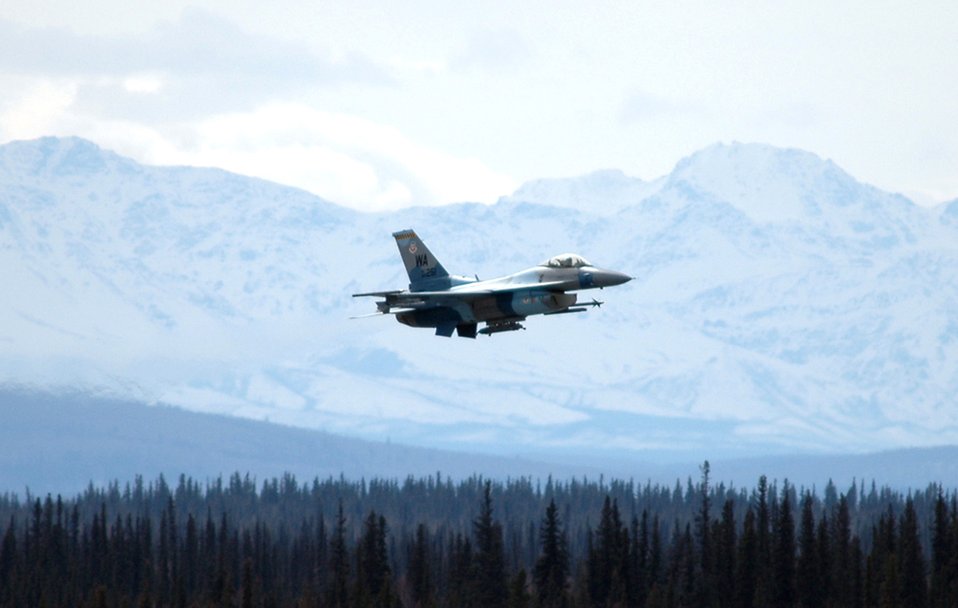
Aggressors vs. friendlies

An